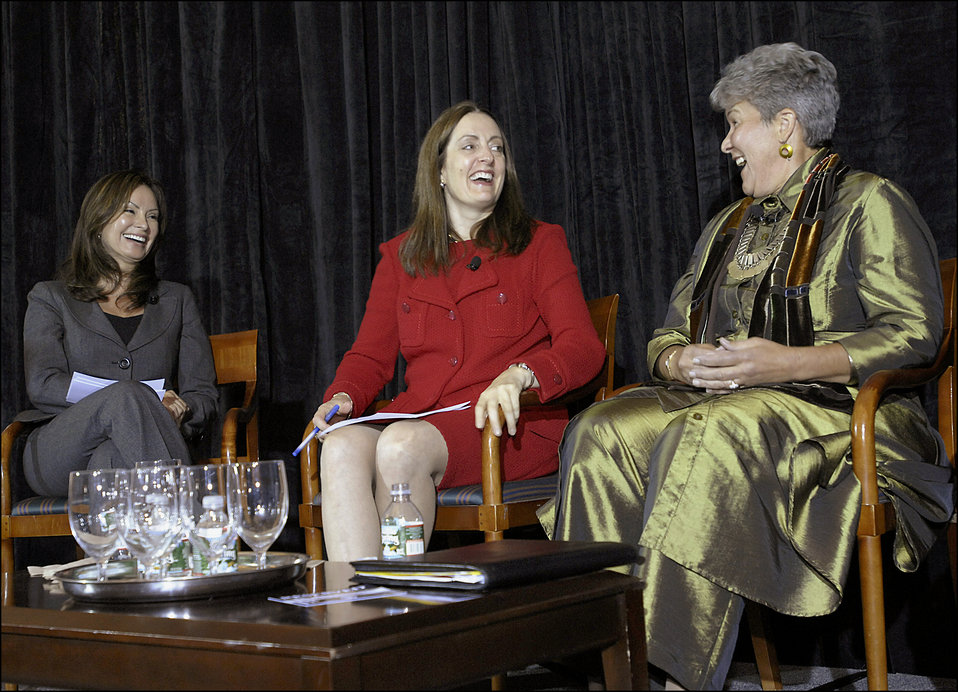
Inaugural Women in Finance Leadership Series, 10/19/10

Treasurer of the United States Rosie Rios, Assistant Secretary for Intelligence and Analysis Leslie Ireland and Assistant Secretary for International Markets and Development Marisa Lago at the inaugural Women in Finance Leadership Series at Treasury.